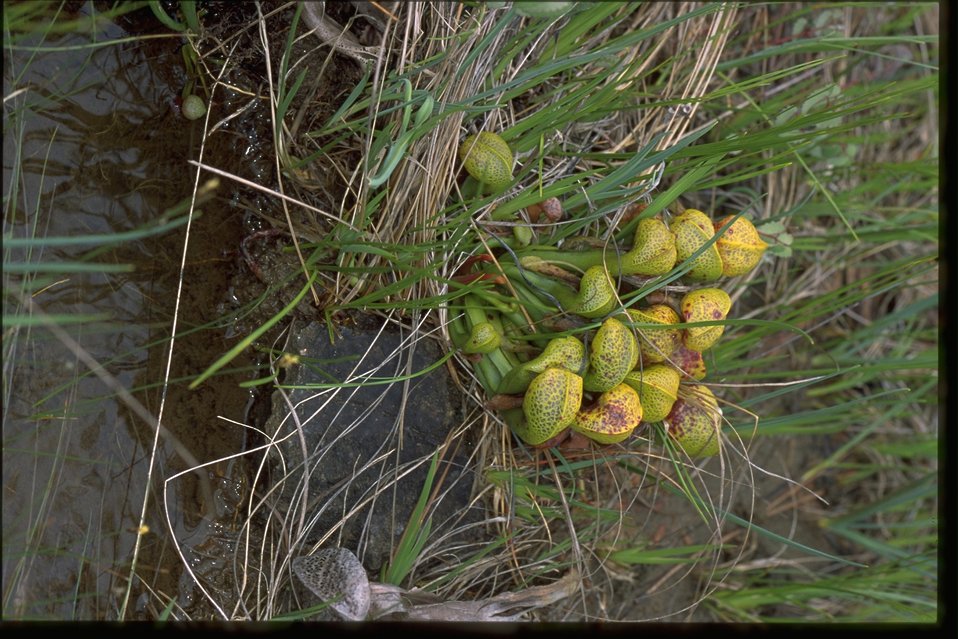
Medium shot of Cobra Lily, Darlingtonia californica.